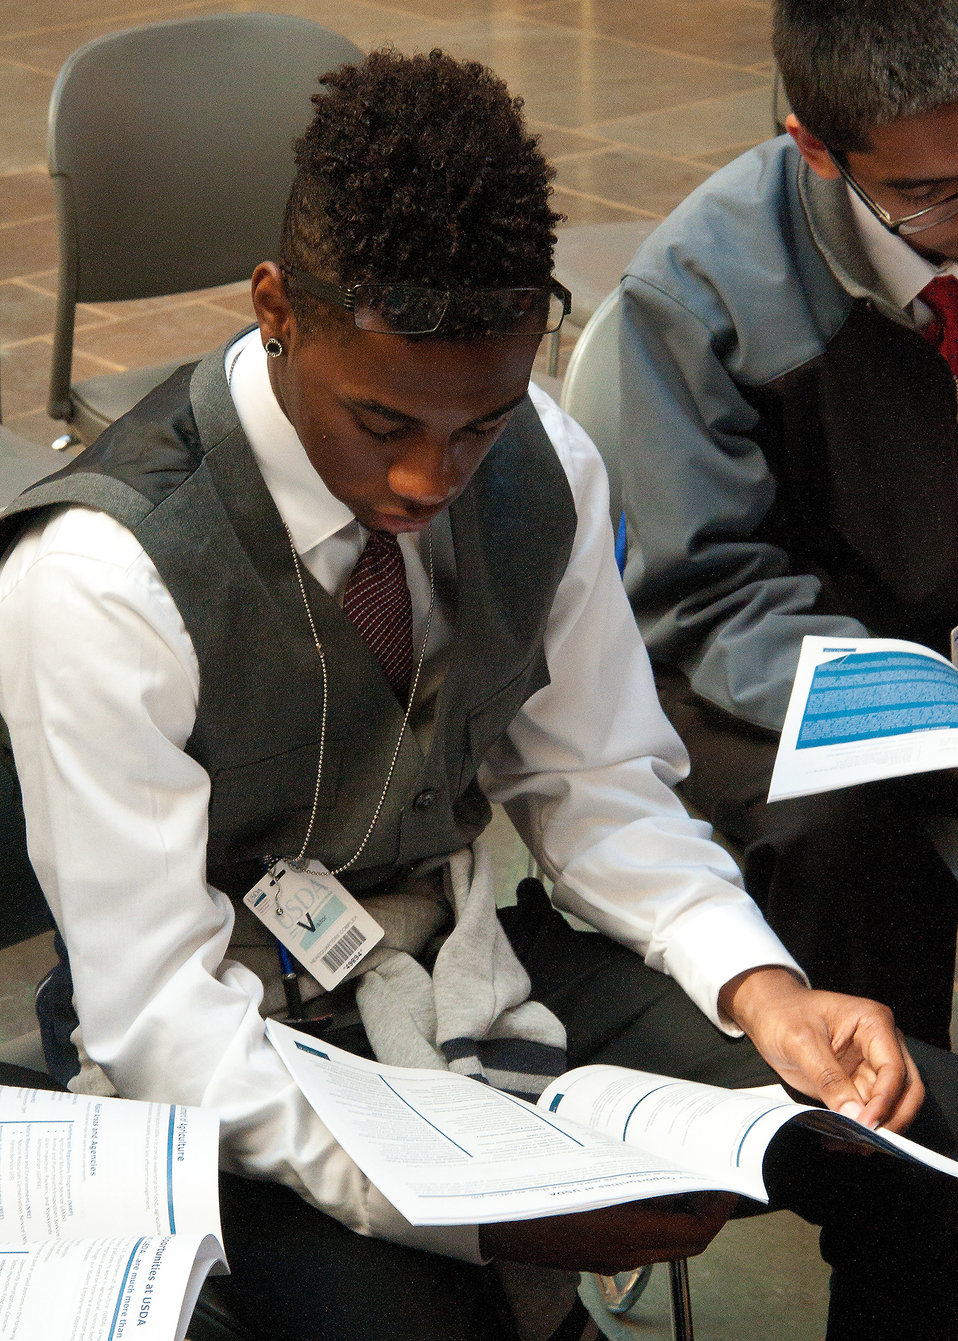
Edison Academy, Fairfax, VA student Joseph Bennett reviews the student employment programs information during the annual U.S. Department of Agriculture’s (USDA) Information Technology (IT) Job Shadow Day held by the USDA Office of the Chief Information Officer (OCIO) to introduce local high school students to careers in information technology in Washington, D.C. on Tuesday, Apr. 2, 2013.